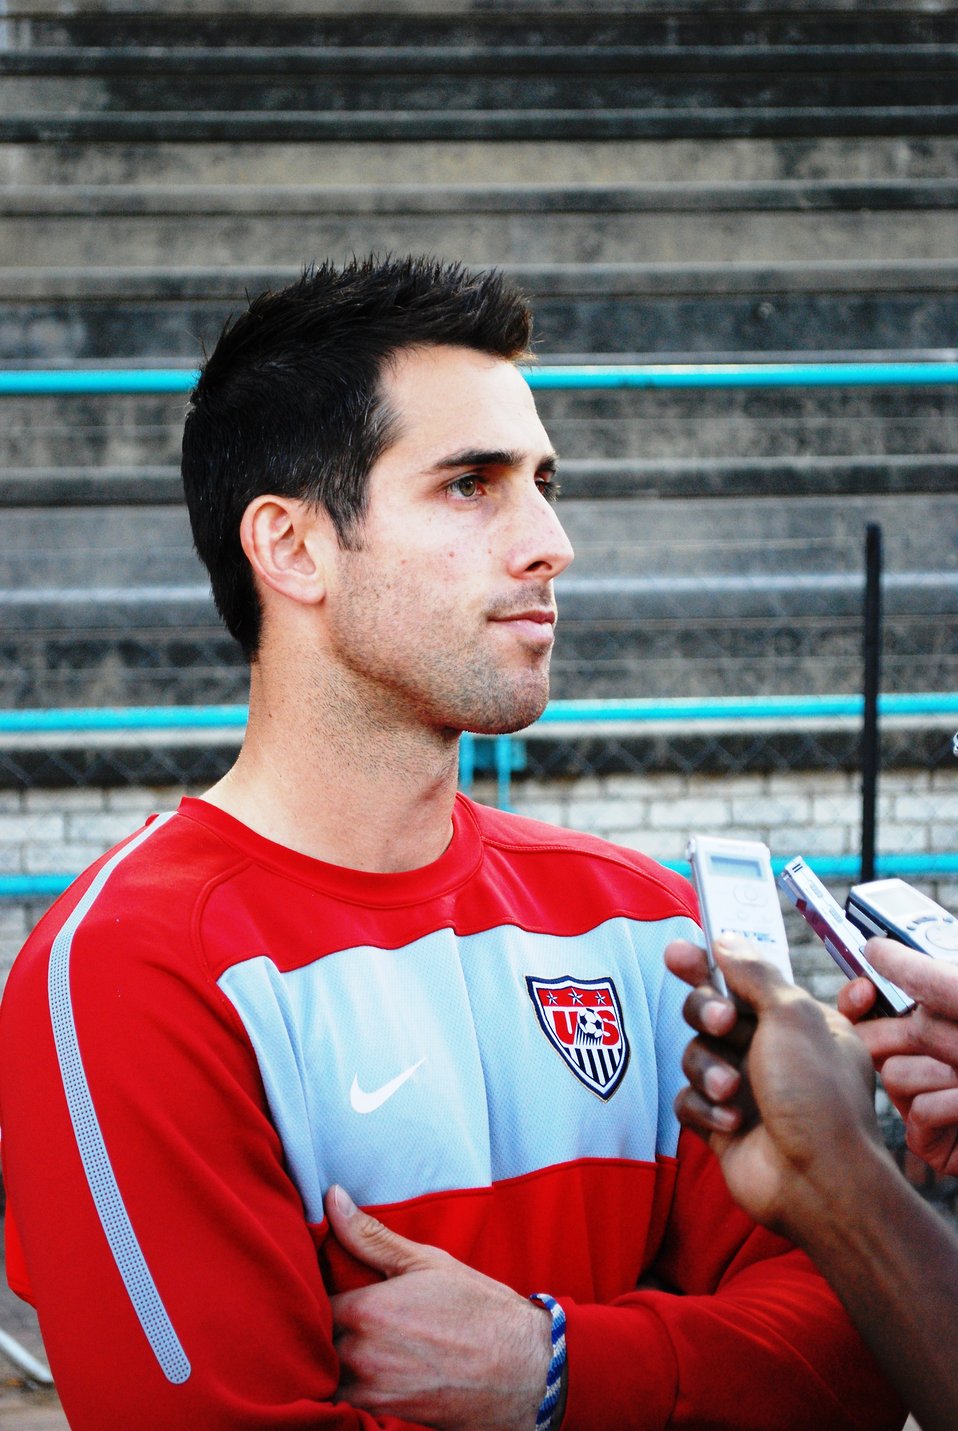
Team Captain Carlos Bocanegra takes questions from reporters at the U.S. National Soccer Team's open practice session with South African students and U.S. Mission to South Africa families at the Pliditch Stadium in Pretoria, South Africa, on June 6, 2010. The U.S. National Soccer Team is preparing for the 2010 World Cup in South Africa.